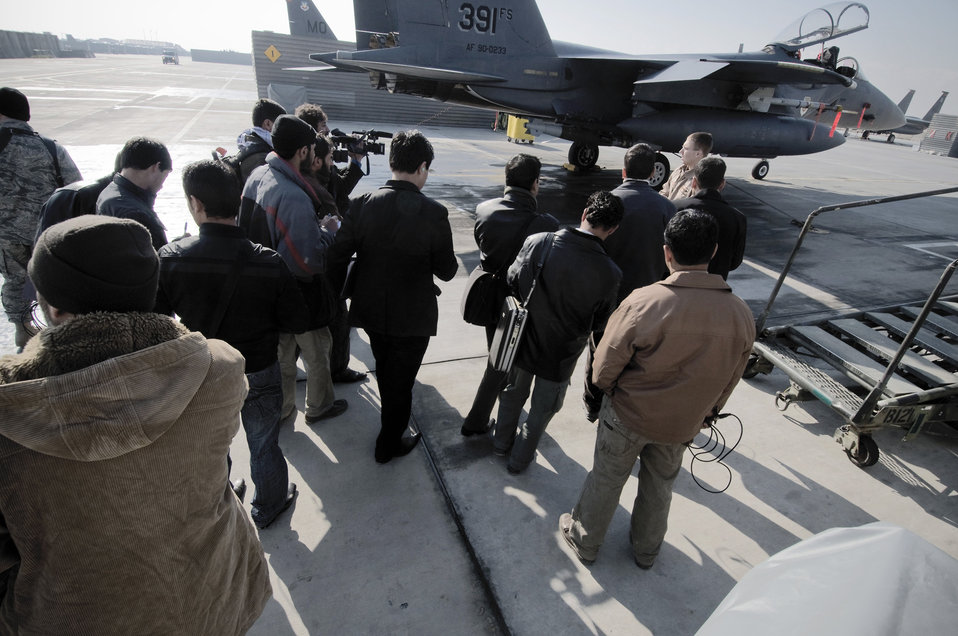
Afghan media learn about close-air support

Members of the Afghan media gather for a tour of an F-15E Strike Eagle Jan. 5 at Bagram Airfield, Afghanistan. Fourteen members of Afghan news agencies attended the 455th Air Expeditionary Wing Afghan Media Day to learn more about close-air support.